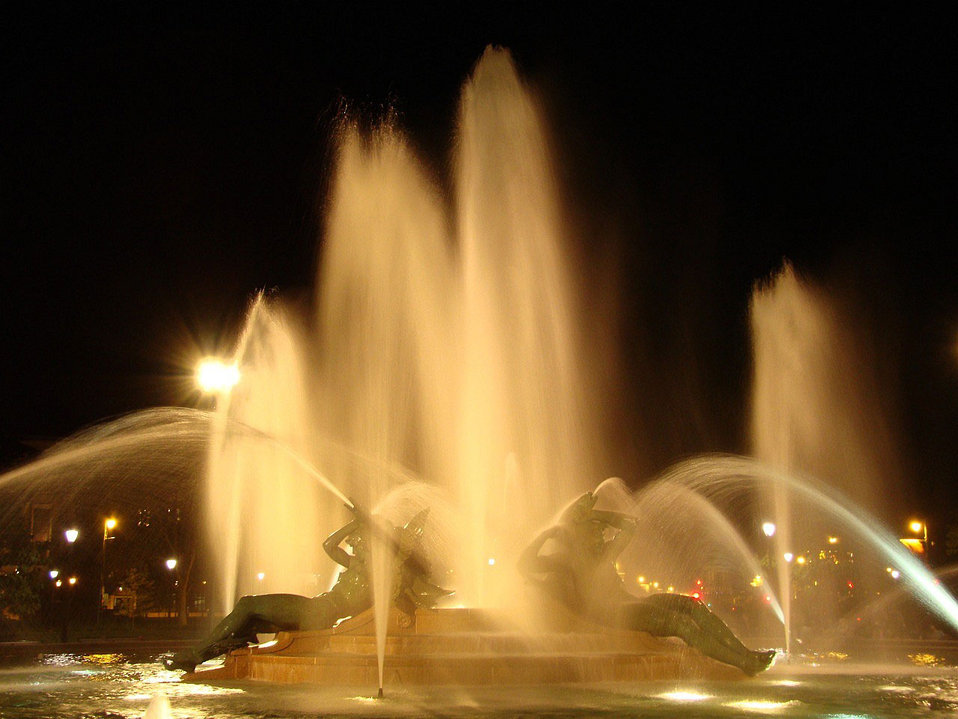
Swann fountain in philadelphia.